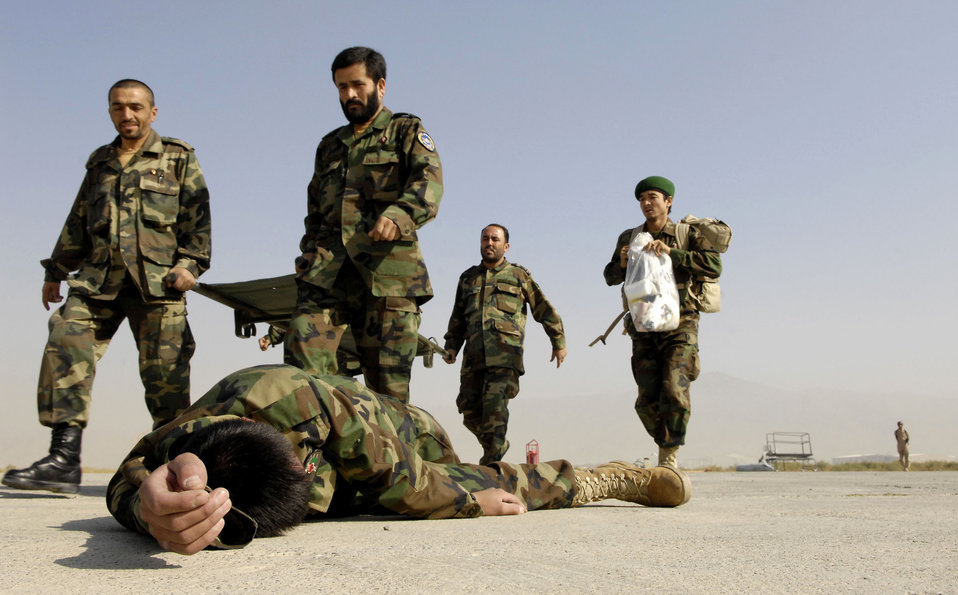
Airmen help Afghans stand up flight medicine clinic

An Afghan national army air corps medical litter crew and medic come to the aid of a downed ANA soldier during an Oct. 20 exercise at Kabul International Airport, Afghanistan. The exercise, observed by U.S. Air Force Airmen, and was designed to help train and keep the medical staff here proficient in the skills needed to do their jobs.